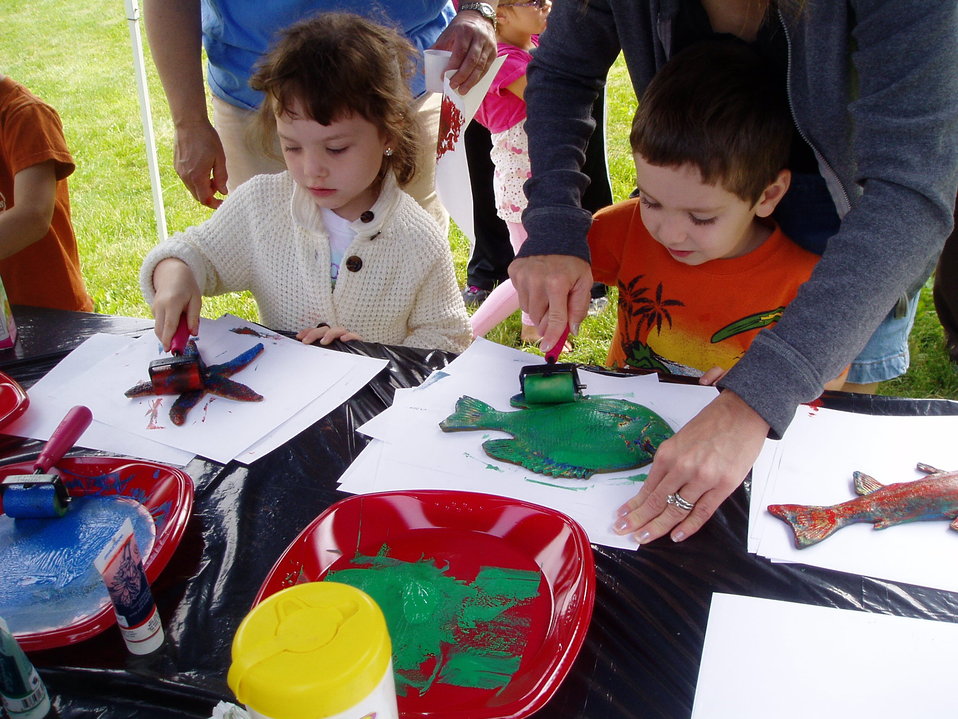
Northeast Fishery Center's Annual Fishing Event

Young kids make fish-themed art projects at the Northeast Fishery Center's annual fishing event in Lamar, PA.